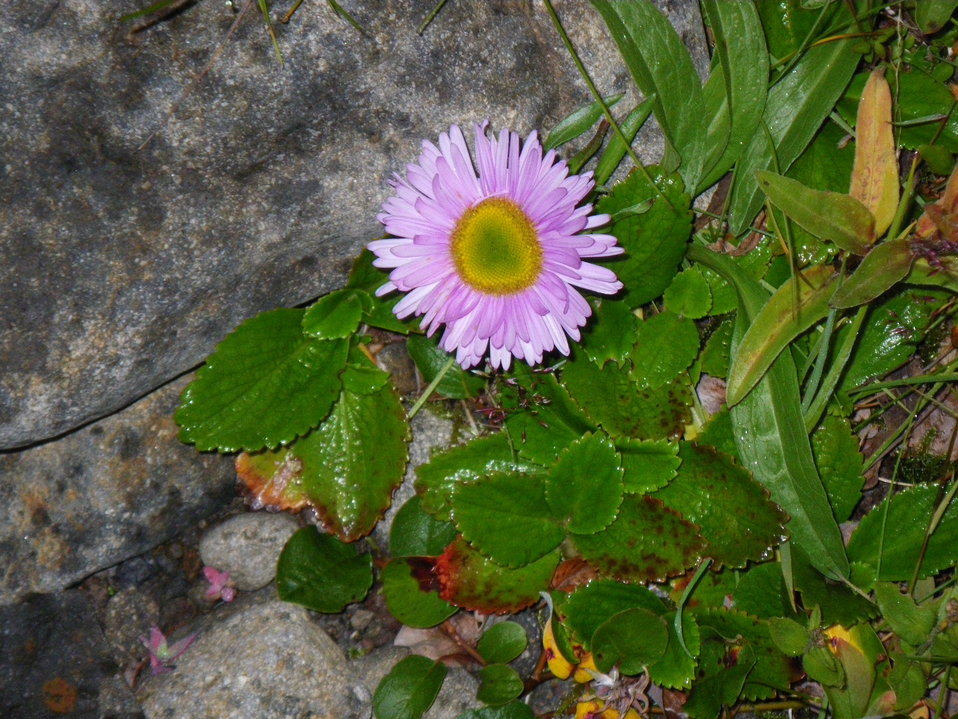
wilderness flower

Izembek National Wildlife Refuge